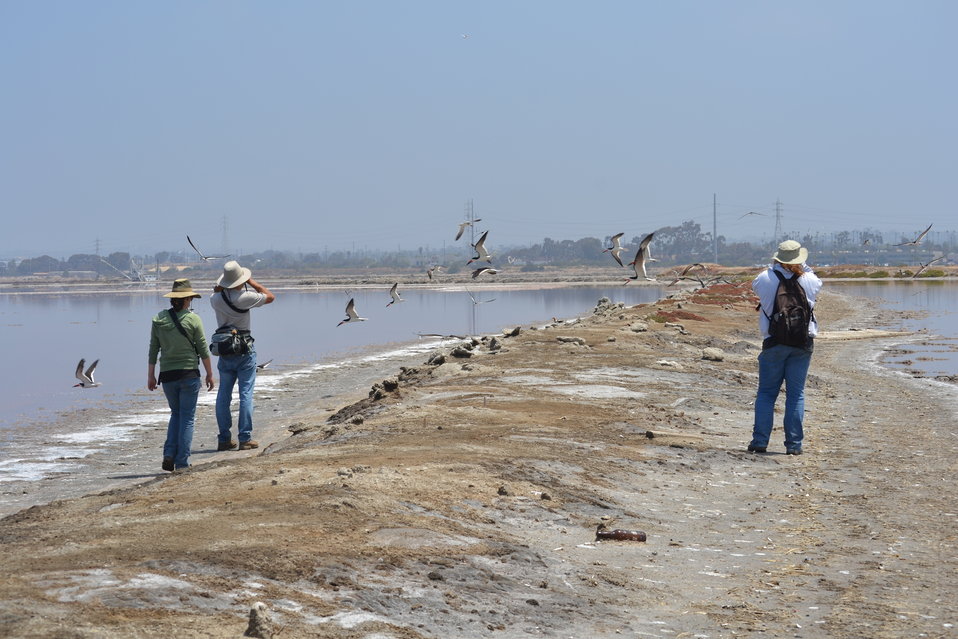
Biologists monitoring black skimmer (Rynchops niger) nests

Carefully watching, carefully tip-toeing, the biologists regularly monitor black skimmer (BLSK) nests, among many other species of terns. BLSK nest and roost in large groups on low sand-bars, or in this case, salt evaporation pond levees. They forage for small fish mainly at night in shallow sheltered water, often flying in small groups